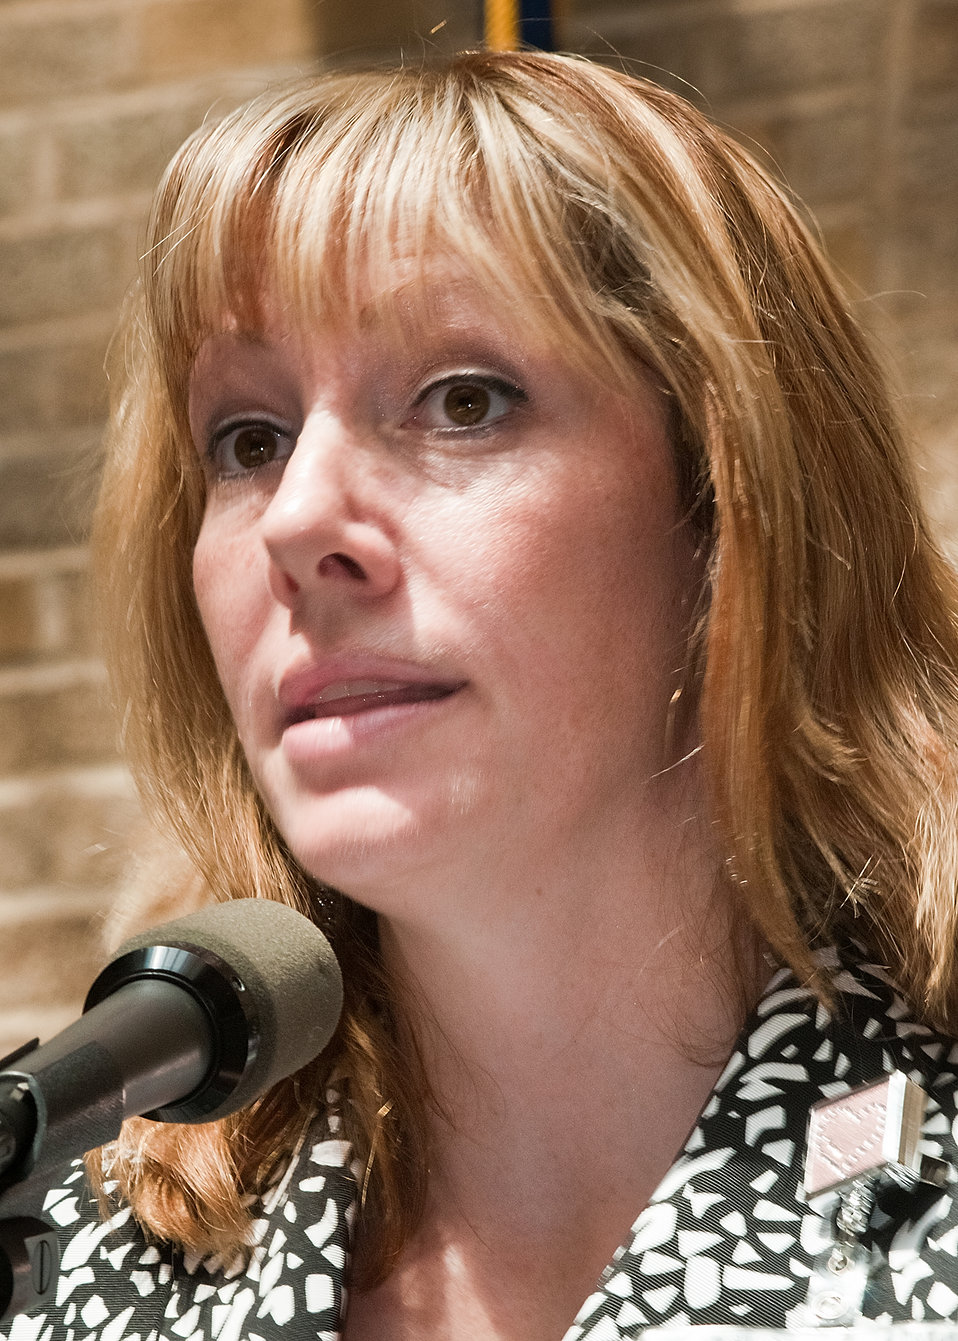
Mika Cross, Office of Human Resources Management, Departmental Management listens to employee questions during a “Telework Program Party/Brown Bag” event on the patio of the Jamie Whitten Building of United States Department of Agriculture, in Washington, DC, on Tuesday, June 7, 2011. The event included an interactive telework panel and exhibits from the field of telework, telecommuting and mobile work environments. The event was open to all USDA employees, supervisors, managers, human resources staff and USDA telework program coordinators.